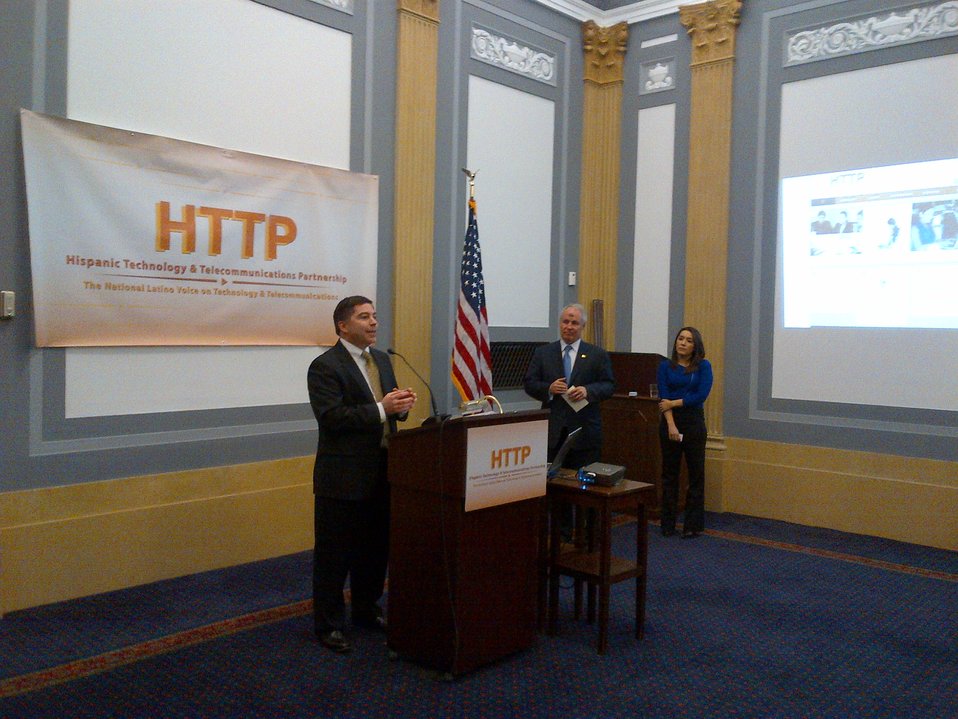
3.5.2014 Hispanic Technology and Telecommunications Partnership (HTTP) relaunch reception

Commissioner O'Rielly giving remarks at the Hispanic Technology & Telecommunications Partnership (HTTP) relaunch reception March 5, 2014